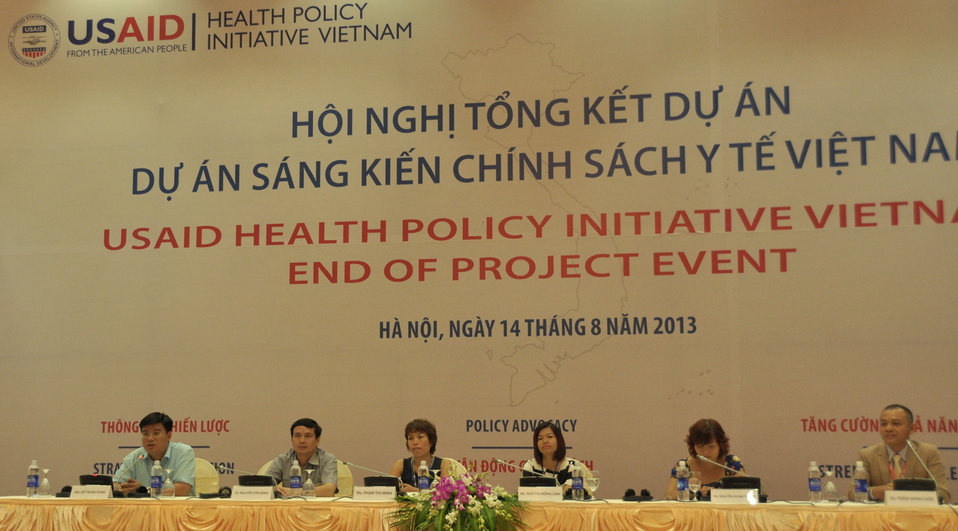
USAID Health Policy Initiative End of Project Workshop

Hanoi, August 14, 2013.